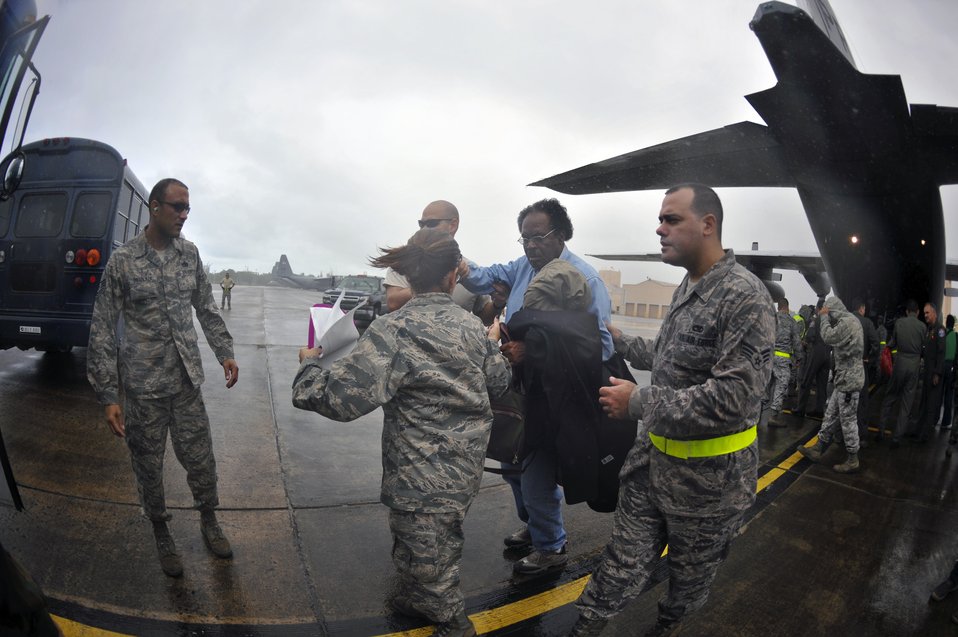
Haiti mission

Airmen from the Puerto Rico Air National Guard’s 156th Airlift Wing assist U.S. citizens after being transported by a C-130E Hercules aircraft Jan. 17, that landed in San Juan, Puerto Rico. The American citizens were evacuated from Haiti where Airmen are playing an active role in support of the relief effort there in the aftermath of a devastating earthquake.